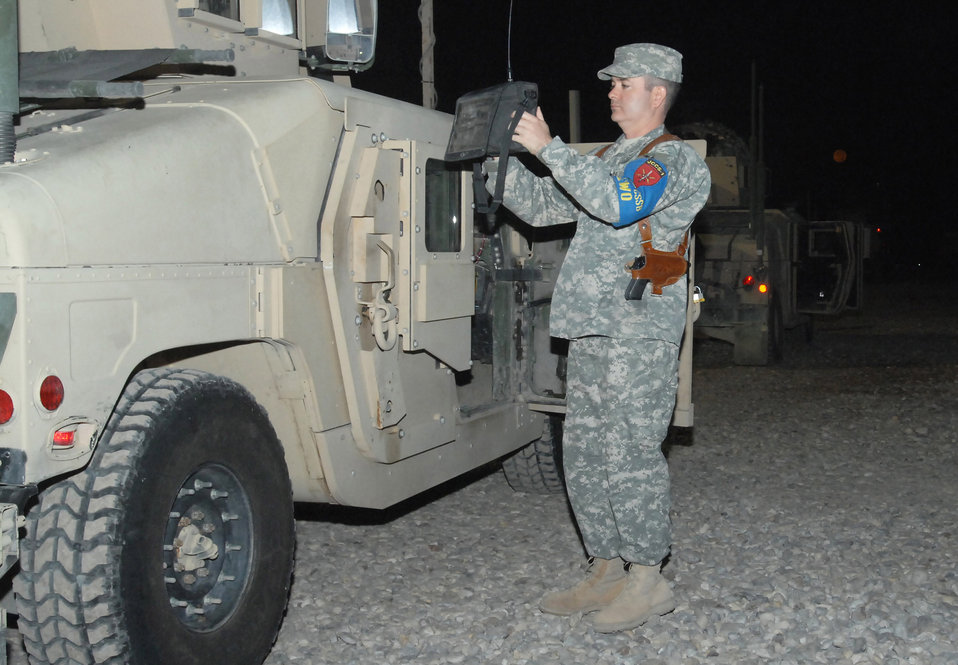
Airman saves lives 1 frequency at a time

Master Sgt. John Blackburn uses a spectrum analyzer to ensure the electronic warfare systems in each vehicle is working properly Nov. 13 at Ali Base, Iraq. Sergeant Blackburn is filling a joint source solution tasking as an electronic warfare officer. He is assigned to the 732nd Expeditionary Support Squadron and attached to the Army's 142nd Combat Sustainment Support Battalion. He is deployed from Tyndall Air Force Base, Fla.